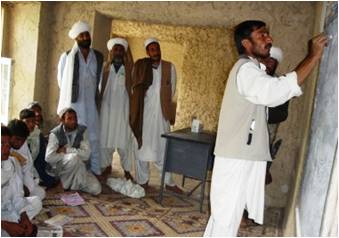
Communities Promote Literacy Education

The establishment of a community development council (CDC) in the village of Rabat in Ghor Province has opened the door to educational opportunities for residents. After its formation with the support of the National Solidarity Programme (NSP), the CDC, an elected body of male and female community members, evaluated the needs of the community and created a literacy course with experienced male and female instructors.
The Government of the Islamic Republic of Afghanistan created the NSP to develop the ability of Afghan communities to identify, plan, manage and monitor their own development projects. NSP empowers communities to make decisions and manage resources during all stages of the project cycle. The programme lays the foundation for a sustainable form of inclusive local governance, rural reconstruction, and poverty alleviation. The U.S. Government, through USAID, is proud to support this Afghan-led, multi-donor development effort.
The three-hour classes are popular with young and old villagers who are pleased to have the opportunity to learn to read. Female students attend class in the morning and male participants study in the afternoon. CDC members regularly evaluate the class and continue to urge other community members to attend.
The course has been especially helpful for young women who previously did not have access to education. Many graduates have passed the entrance exam to enter the fourth grade of local government-supported schools. The majority of students in the literacy course are committed to furthering their education and working for the development of their country.
Course participants offered strong praise for their local CDC and the opportunities they now have. 'I was illiterate before I attended the literacy course in our village,” explained Mrs. Gulalai, a CDC member, and literacy course participant. “Now, I can easily read books. Our course teacher has also taught us about hygiene and preventing the spread of diseases. Since I am now a learned woman, I can bring up my children nicely and well-educated.'